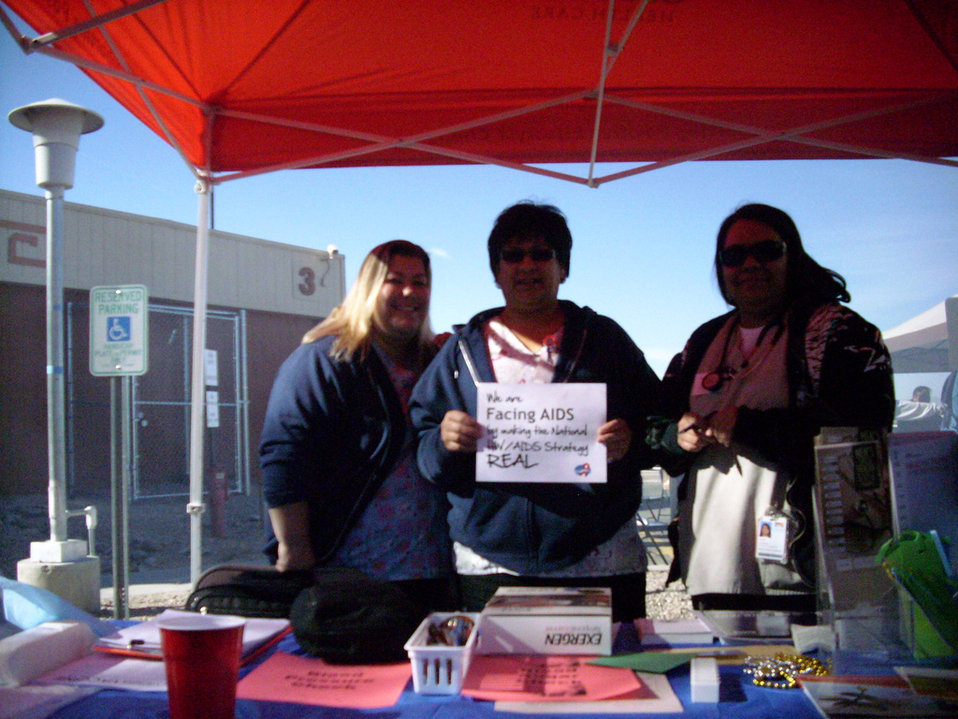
We are Facing AIDS through NHAS-23